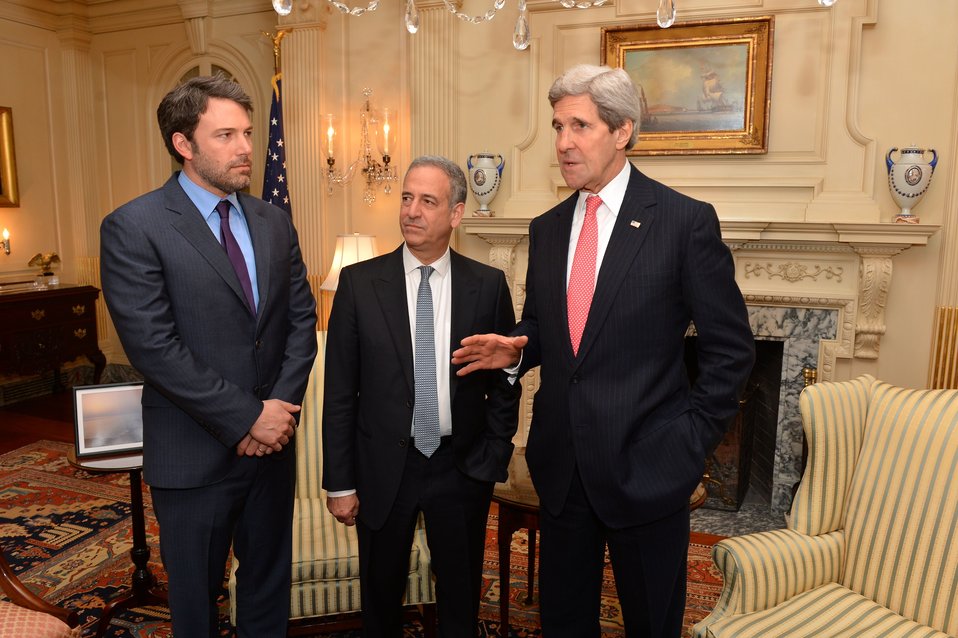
Secretary Kerry Meets With Ben Affleck

U.S. Secretary of State John Kerry and Special Envoy for the Great Lakes Region of Africa and the Democratic Republic of the Congo Russ Feingold meet with Ben Affleck, Founder of the Eastern Congo Initiative, at the U.S. Department of State in Washington, D.C., on February 26, 2014.